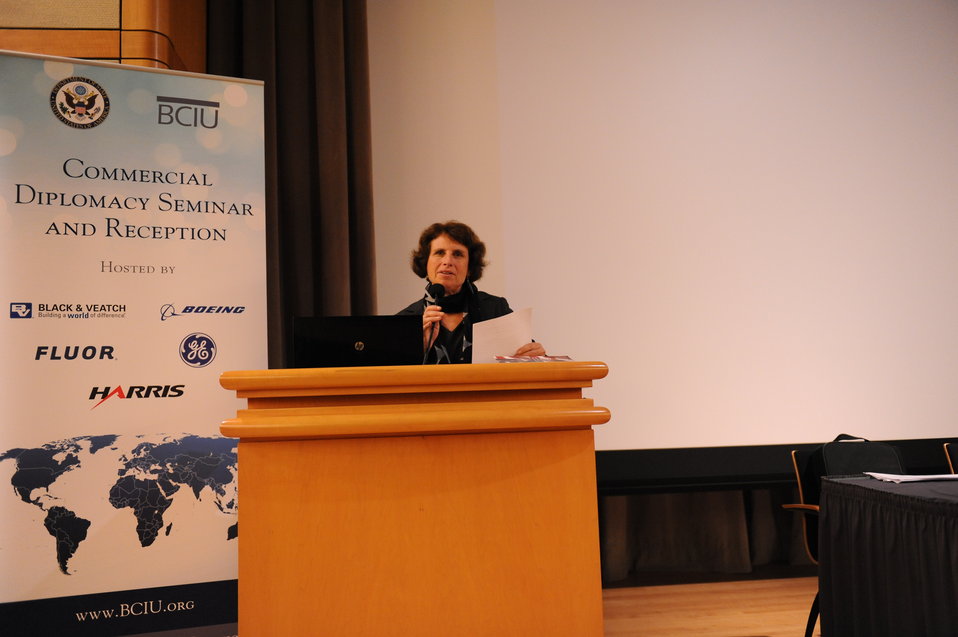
Special Representative Hariton Delivers Remarks at a Commercial Diplomacy Seminar

Special Representative for Commercial and Business Affairs Lorraine Hariton delivers remarks at a Commercial Diplomacy Seminar for Desk Officers at the U.S. Department of State in Washington, D.C., on November 21, 2011.